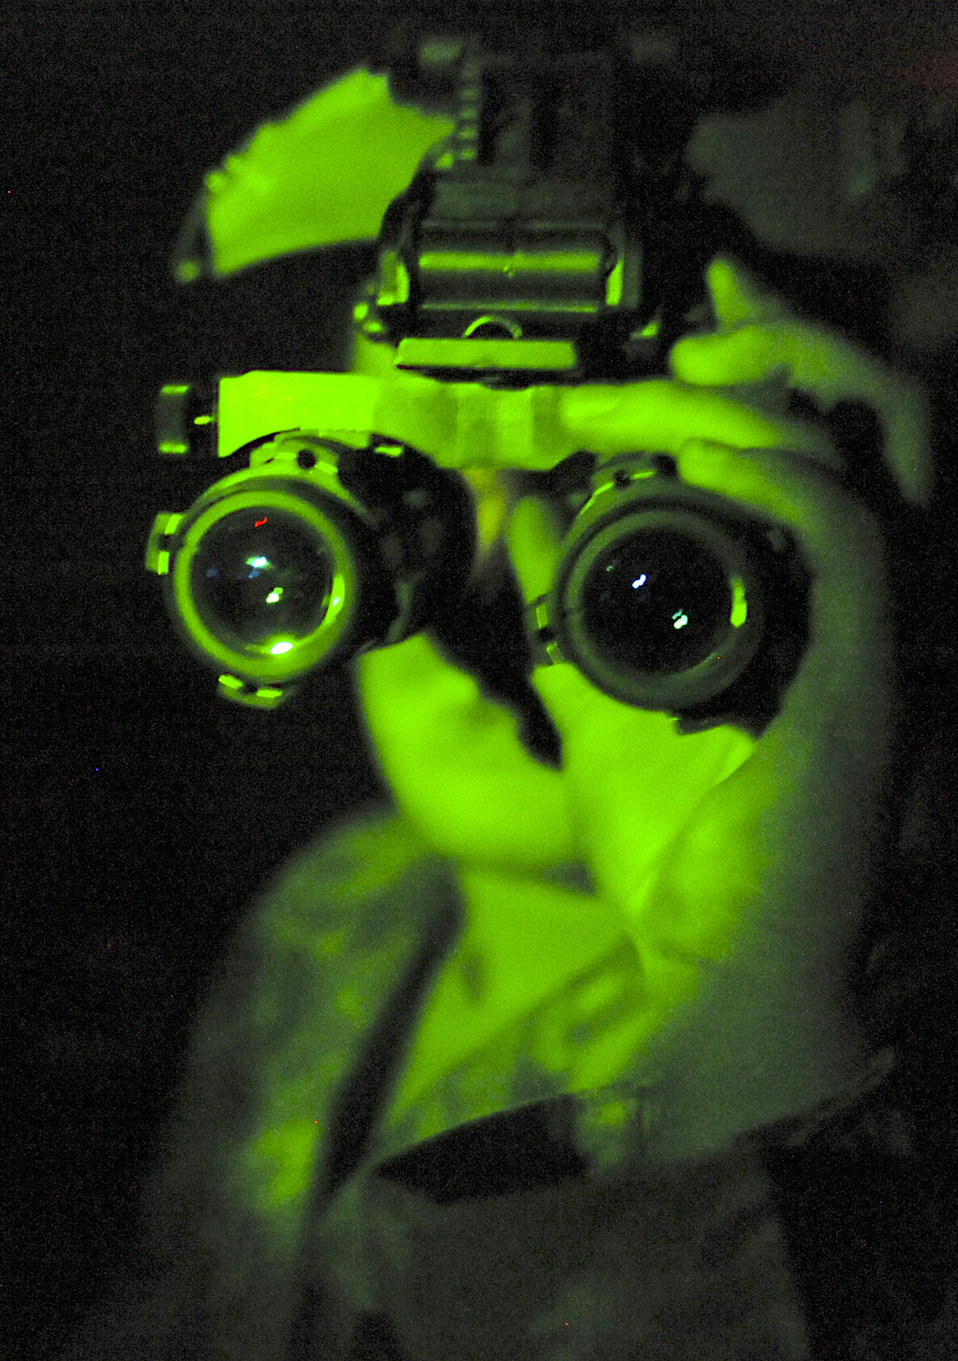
Can't hide from me

Airman 1st Class Jill Brumley checks out night vision goggles May 6, 2010, at Elmendorf Air Force Base, Alaska. She is an aircrew flight equipment specialist with the 19th Fighter Squadron.